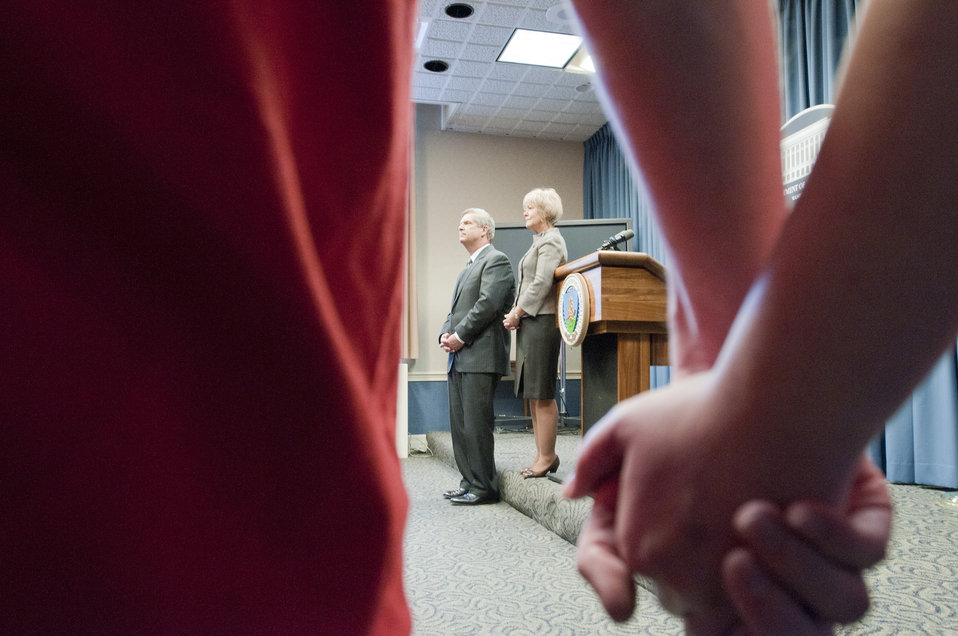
More than 90 students and educators from Mason City High School, Mason City, Iowa held hands while they sang a song for Secretary Tom Vilsack and his wife Christie on March 25, 2011 in the U.S. Department of Agriculture (USDA) headquarters in Washington, D.C. Secretary Vilsack talked about the mission of the USDA, the many places around the world that the USDA supports, as well as mentioning some noted Iowans in government and agriculture history. The Vilsacks answered several questions from the students, from “What is your day like,” to “What are the major problems USDA faces?” Following that, Director of Choral Activities Joel Everist led the group in song for the Vilsacks.